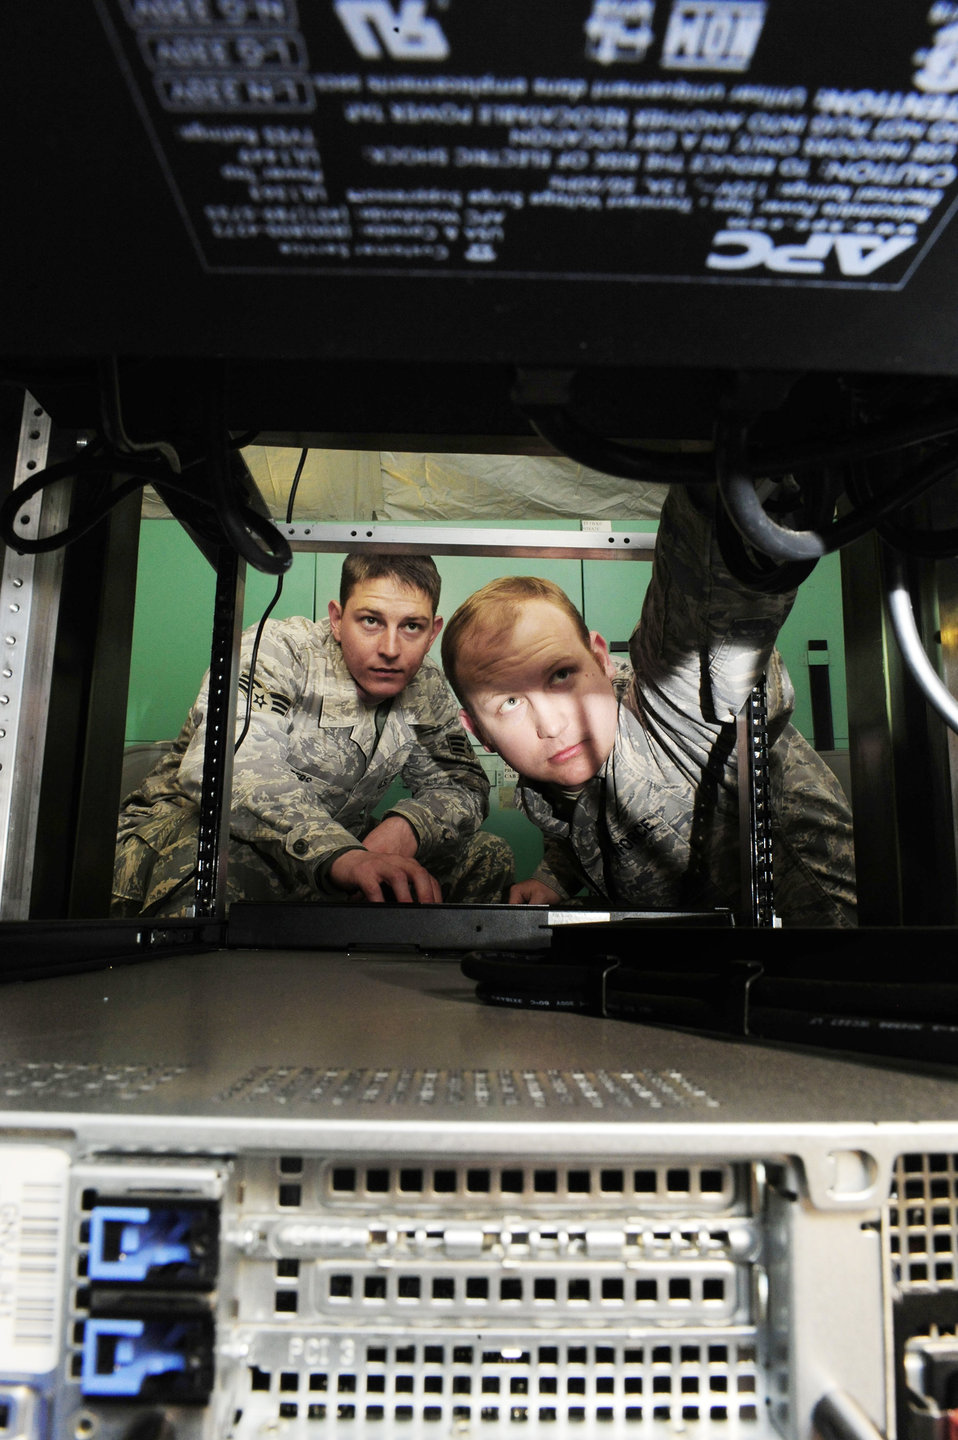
Airmen aid medical support mission in Chile

Senior Airman Patrick Walters and Staff Sgt. William Kidd build servers while supporting an Expeditionary Medical Support team March 15, 2010, in Angol, Chile. The two Airmen deployed March 7 to support an EMEDS team in relief efforts after the earthquake in Chile Feb. 27. Airman Walters and Sergeant Kidd are assigned to the 52nd Combat Communications Squadron from Robins Air Force Base, Ga.